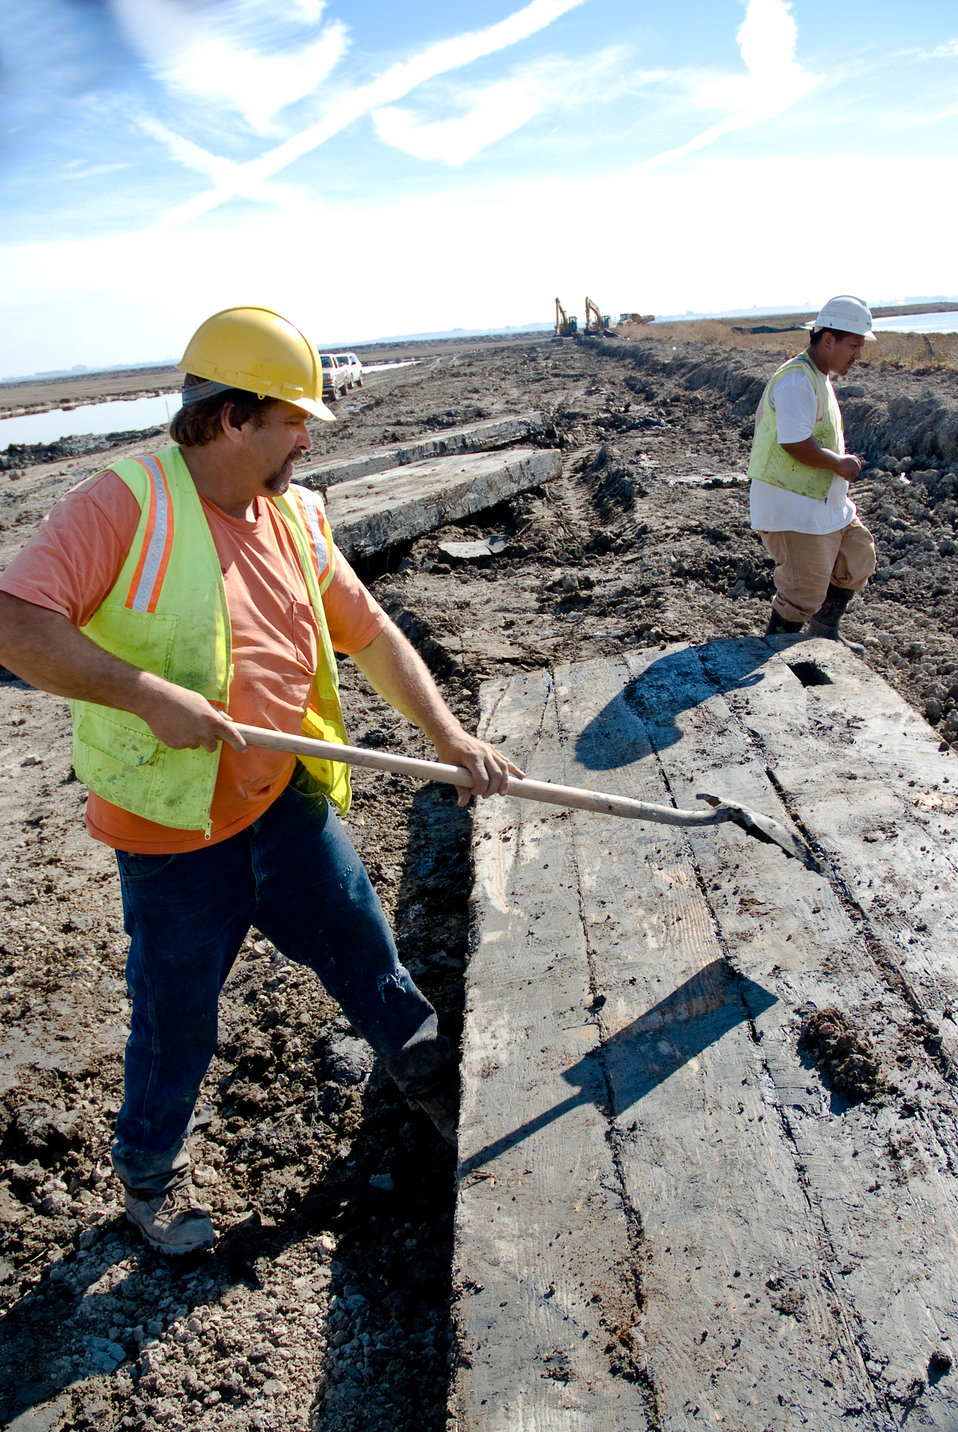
Restoration work at Don Edwards SFBay NWR

John Monts, of Galindo Contracting at the restoration site of Alviso, CA Pond A6 on the Don Edwards SF Bay NWR, an effort of the South Bay Salt Pond Restoration Project that was funded, in part, with money from the federal stimulus act.